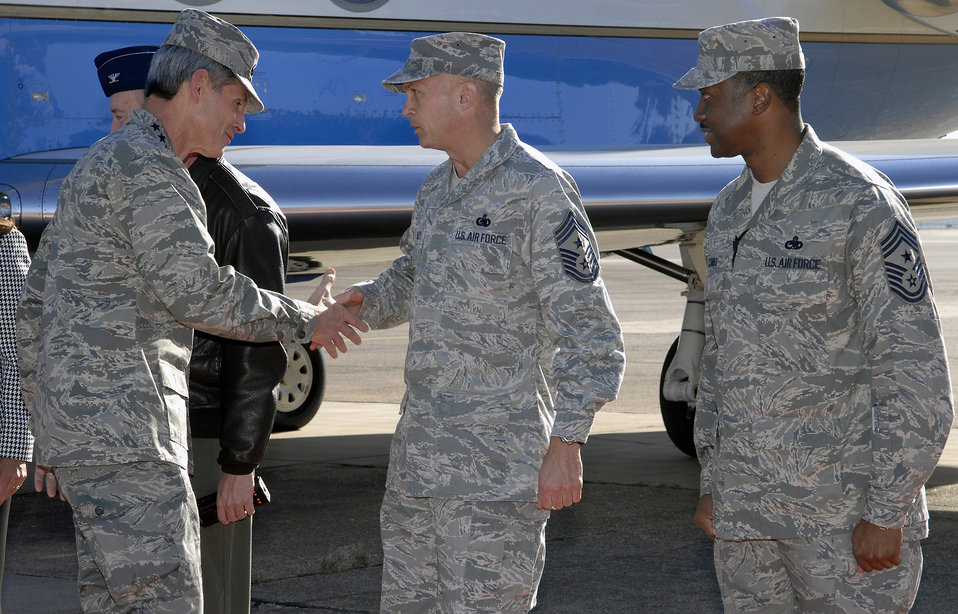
Re-invigorating nuclear enterprise a top priority

Chief Master Sgt. Tim Cooley greets the Chief of Staff of the Air Force Gen. Norton Schwartz as he arrives at Barksdale Air Force Base, La., Nov. 25. Chief Cooley is the 2nd Bomb Wing command chief at Barksdale AFB.